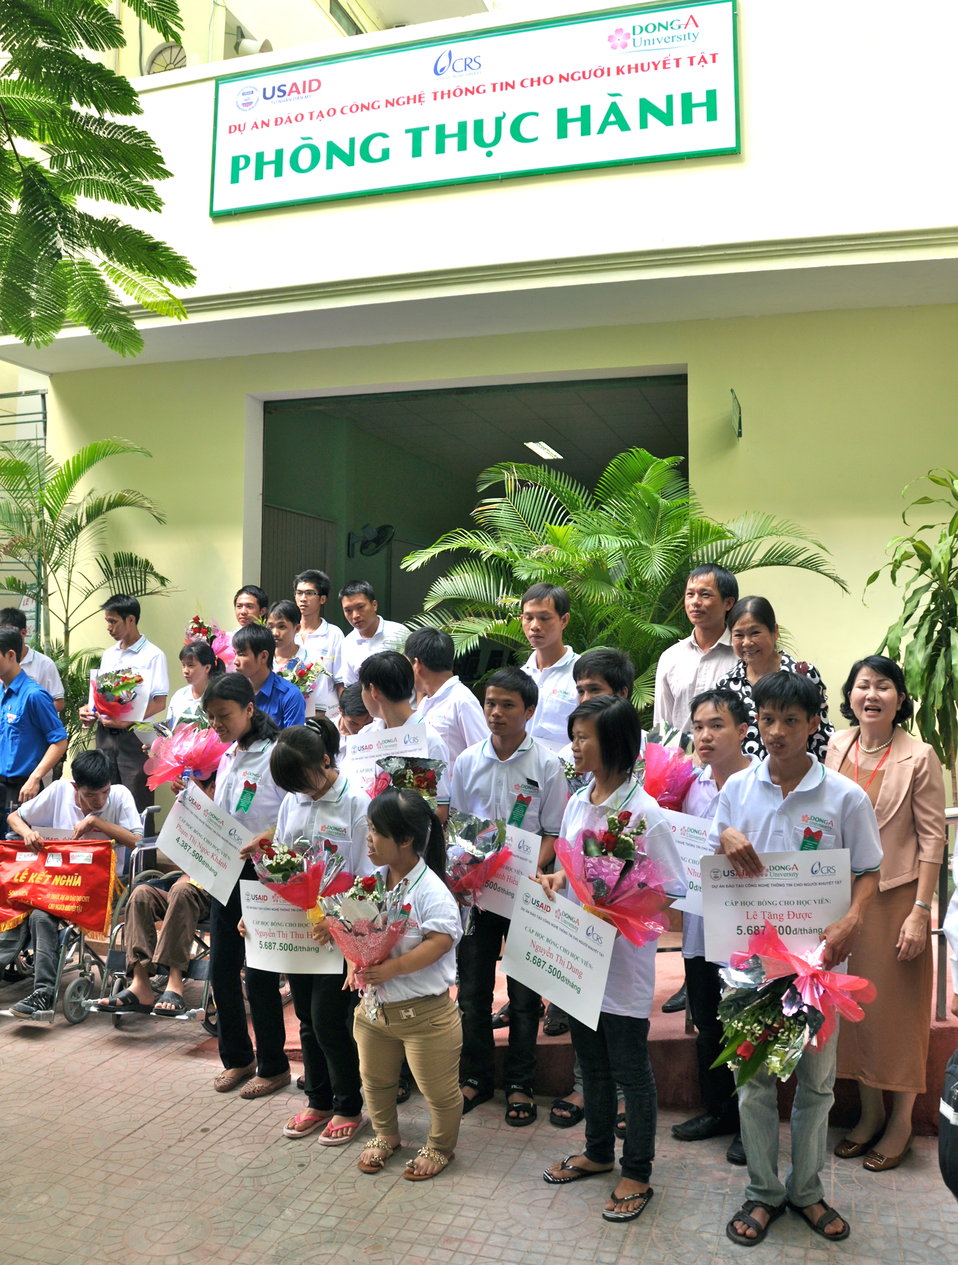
New class of students starts at Dong A Univeristiy with support from USAID and CRS

Photo: @USAIDVietnam
December 3, 2012